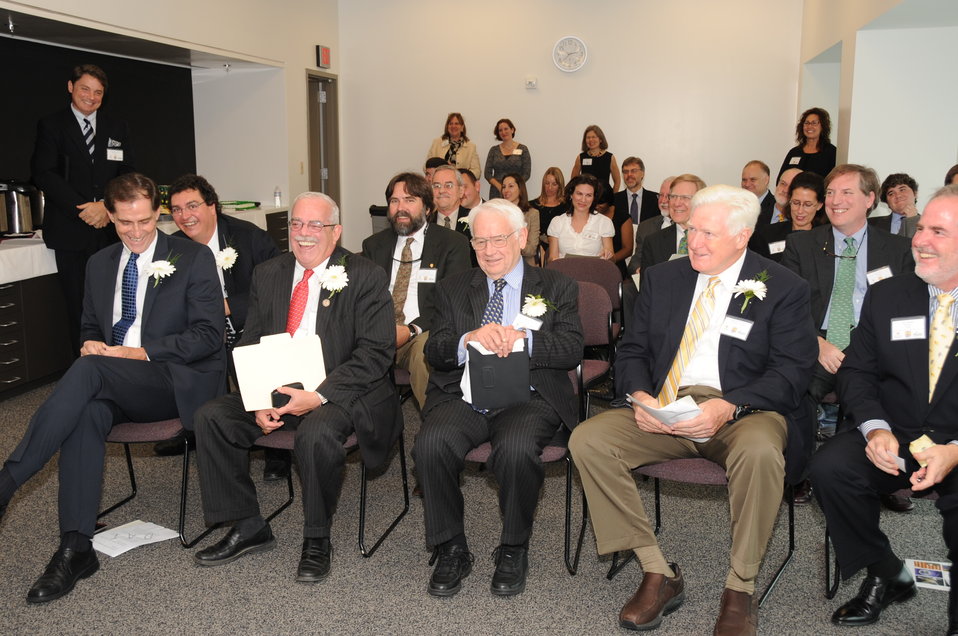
Together in Conservation

Memorandum of Understanding Signing Ceremony with U.S. Fish and Wildlife Service, Smithsonian Institution, and George Mason University. October 26, 2012